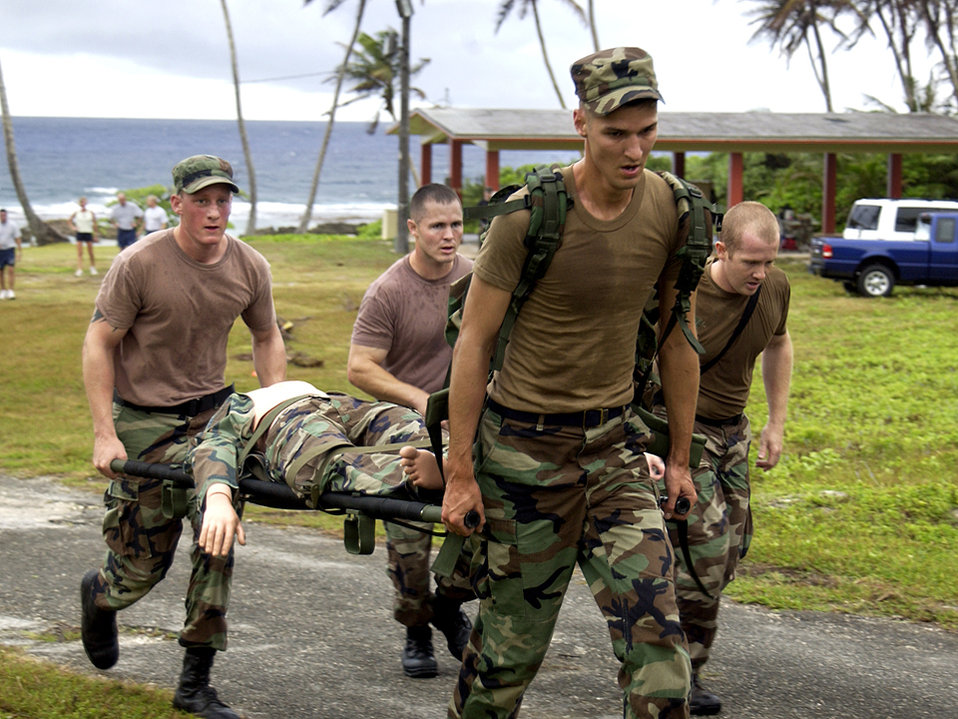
Competition challenges Airmen's warfighting abilities

Senior Airman Kyle Altstaetter leads other members of the 36th Contingency Response Group team in carrying a critically wounded patient to the medical evacuation point during Warrior Day Jan. 26 at Checkpoint 4 at Andersen Air Force Base, Guam. Warrior Day is an annual competition on Andersen AFB to enhance Airmen's warfighting skills.